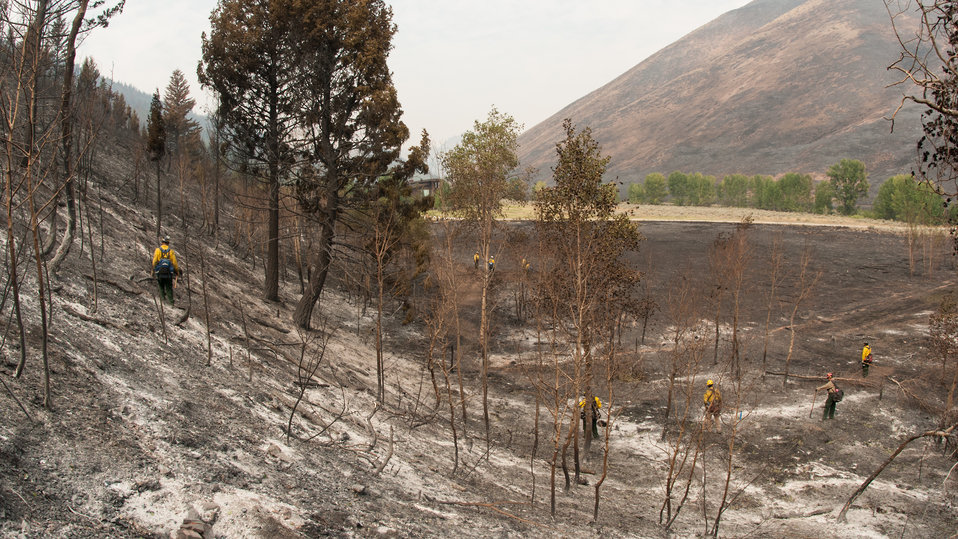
Department of the Interior, Indian Affairs (BIA) Southern Plains Initial Attack Type 2 Crew, walks a line along the hillside, looking and feeling for hotspots above and below the ground; in the distance one of the homes that was saved from the Beaver Creek Fire, near Hailey, ID, in the interface with U.S. Department of Agriculture (USDA) Forest Service (FS) and Sawtooth National Forest and Bureau of Land Management (BLM) lands, on Wednesday, Aug 21, 2013.